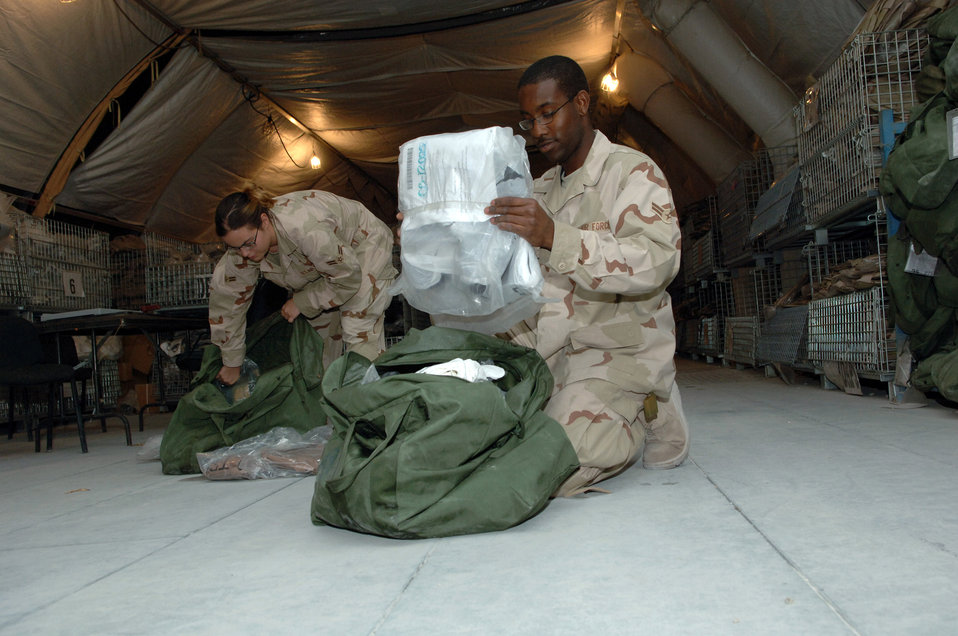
Expeditionary Theater Deployment Center equips transient Airmen

Two Airmen passing through the 379th Air Expeditionary Wing on their way to Iraq go through mobility bags issued to them at the Expeditionary Theater Deployment Center, ensuring all the equipment matches their inventory sheets Sept. 1 in Southwest Asia.